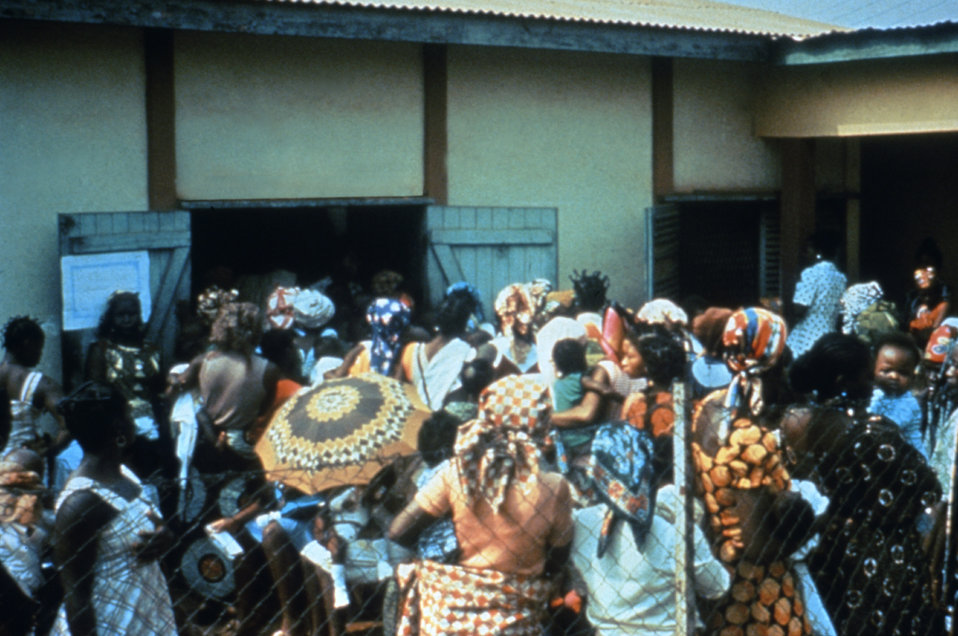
This photograph is showing a clinic outside the United States where CDC field clinicians treated numerous local villagers.